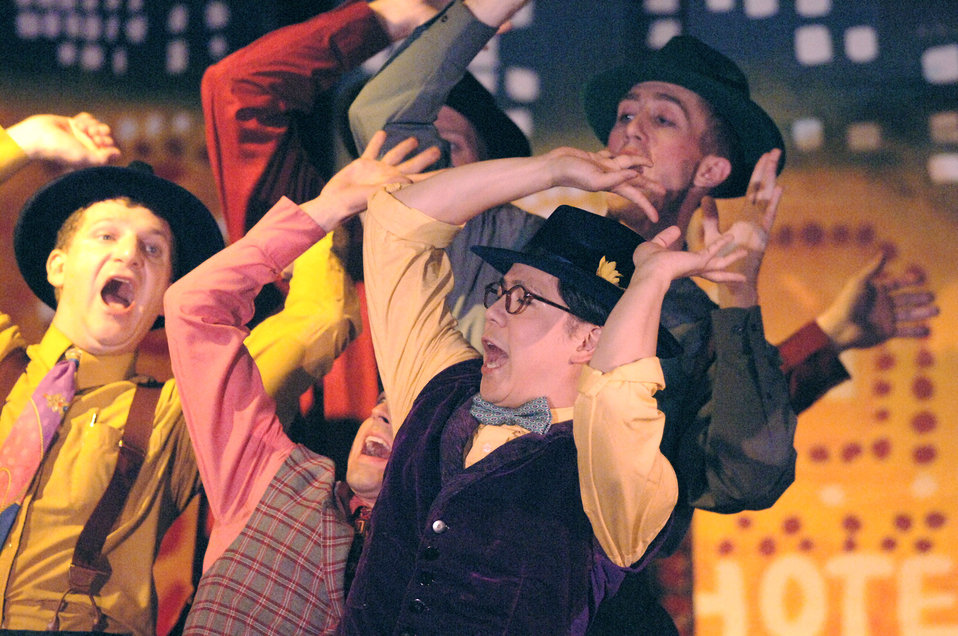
Top performers

YOKOTA AIR BASE, Japan (AFPN) -- Members of the Yokota Players perform in a